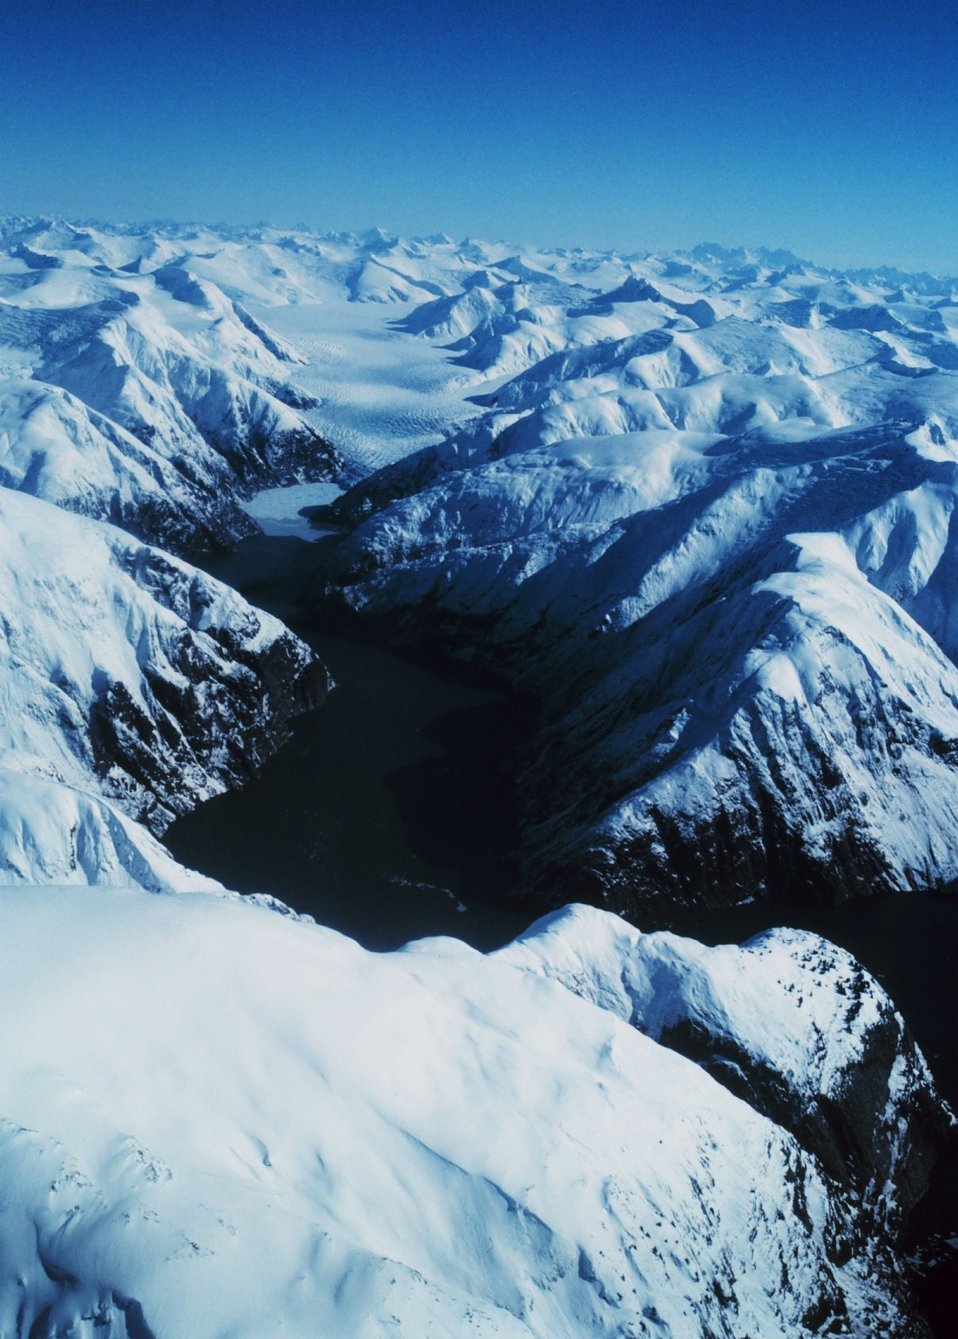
Possibly Glory Lake between Petersburg and Juneau